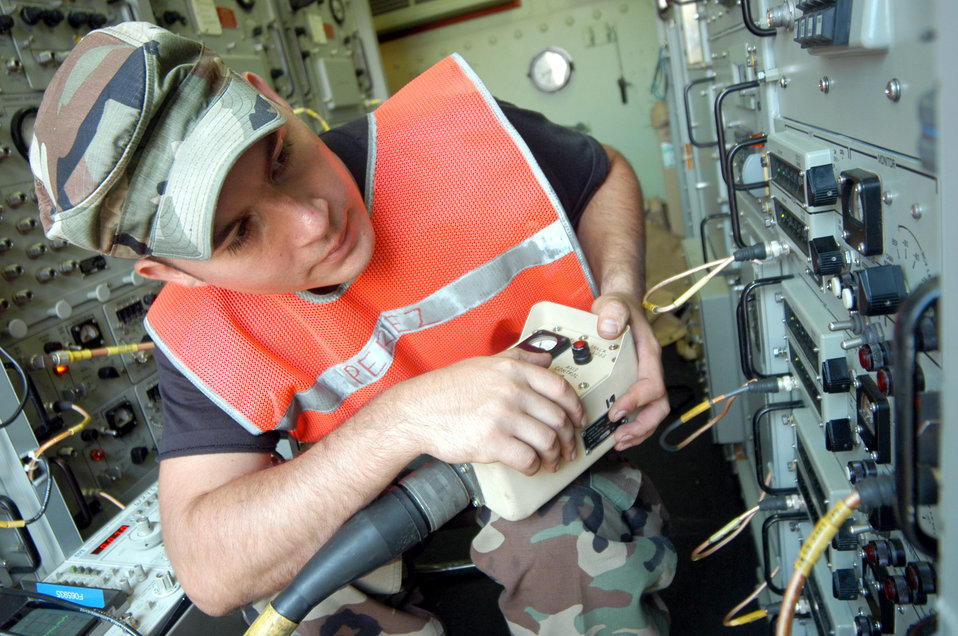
The mob

ROBINS AIR FORCE BASE, Ga. (AFPN) -- Tech. Sgt. Sergio Perez configures an antenna for a satellite here. He is assigned to the 51st Combat Communications Squadron, commonly called the